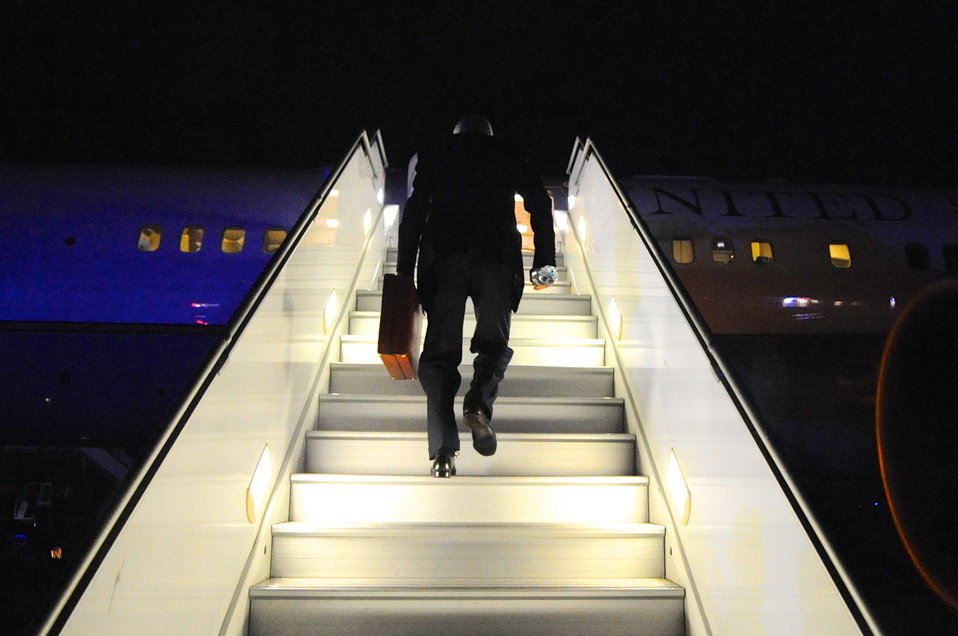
Secretary Kerry Departs Geneva to Resume Middle East Peace Talks

6:35 a.m., September 15, 2013 - U.S. Secretary of State John Kerry climbs the steps of his Air Force jet for a flight from Geneva, Switzerland, to Tel Aviv, Israel, and a meeting in Jerusalem with Prime Minister Benjamin Netanyahu focused on final status negotiations with Palestinian leaders.